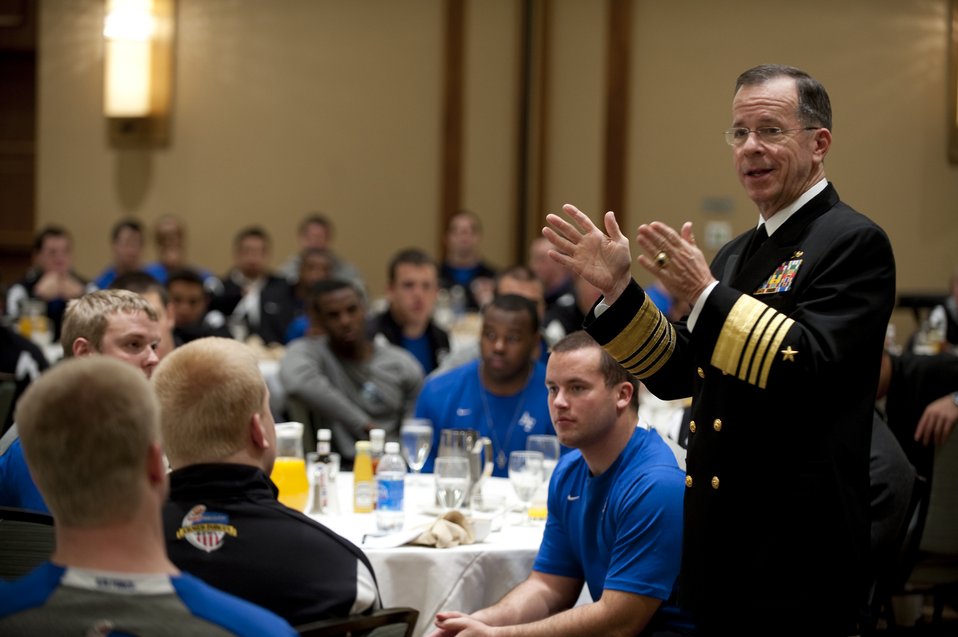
CJCS visits with Academy Falcons

Adm. Mike Mullen, chairman of the Joint Chiefs of Staff, addresses members of the Air Force Academy Falcons football team Dec. 30, 2009, before their appearance in the Armed Forces Bowl in Fort Worth, Texas. On Dec. 31, the Falcons won the bowl game, defeating the University of Houston Cougars 47-20.